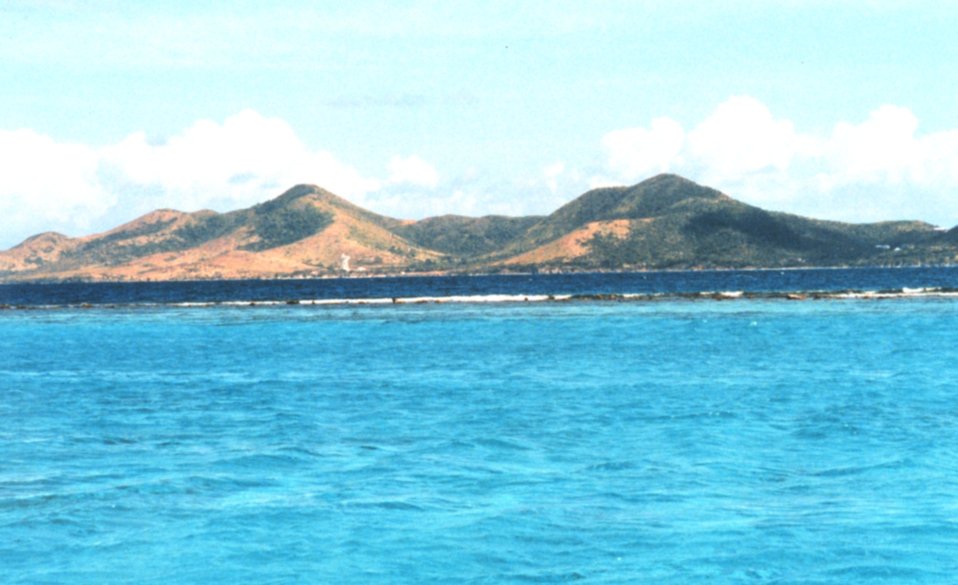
View from Buck Island Lagoon of east St. Croix. Telescope of National Radio Astronomy Observatory is visible.